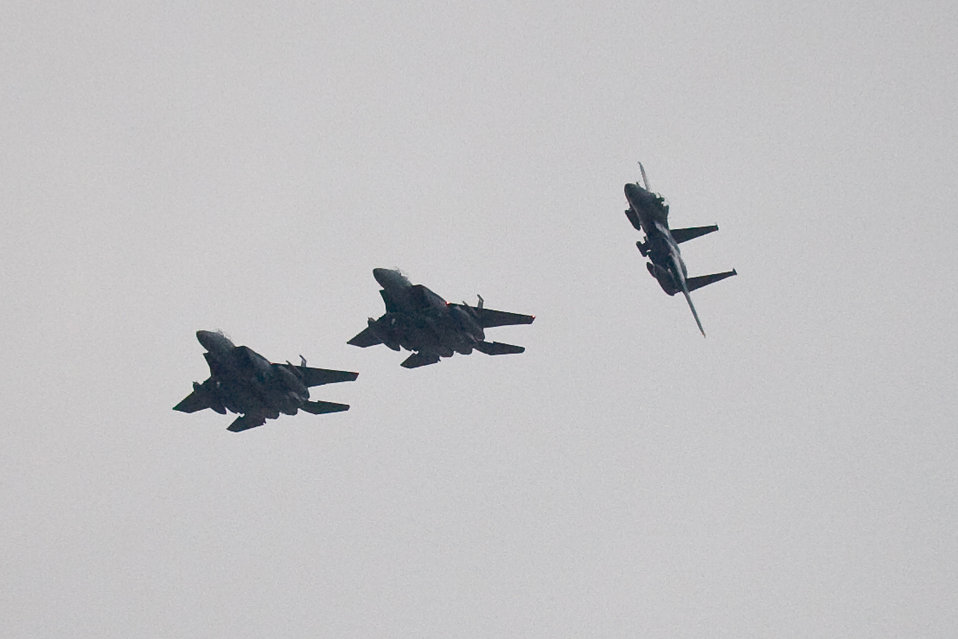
F-15E pilot strikes 4,000 hours

Pilot Lt. Col. David Iverson (right) rolls out for the final approach to Lackland Air Force Base, Texas, Jan. 11, 2010. The 10-hour nonstop flight from Royal Air Force Lakenheath, England, marked his passage through the 4,000 hours in the F-15E Strike Eagle. Colonel Iverson is the 492nd Fighter Squadron commander at RAF Lakenheath. The exact moment he passed the milestone was while his aircraft was being refueled.